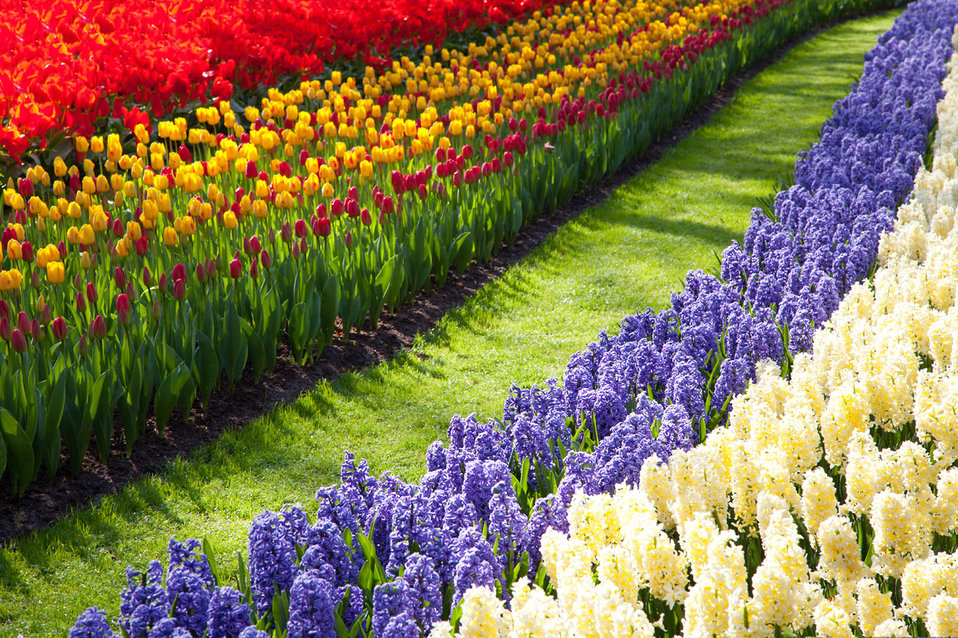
Path through flowers

A green path through flower beds in keukenhof.